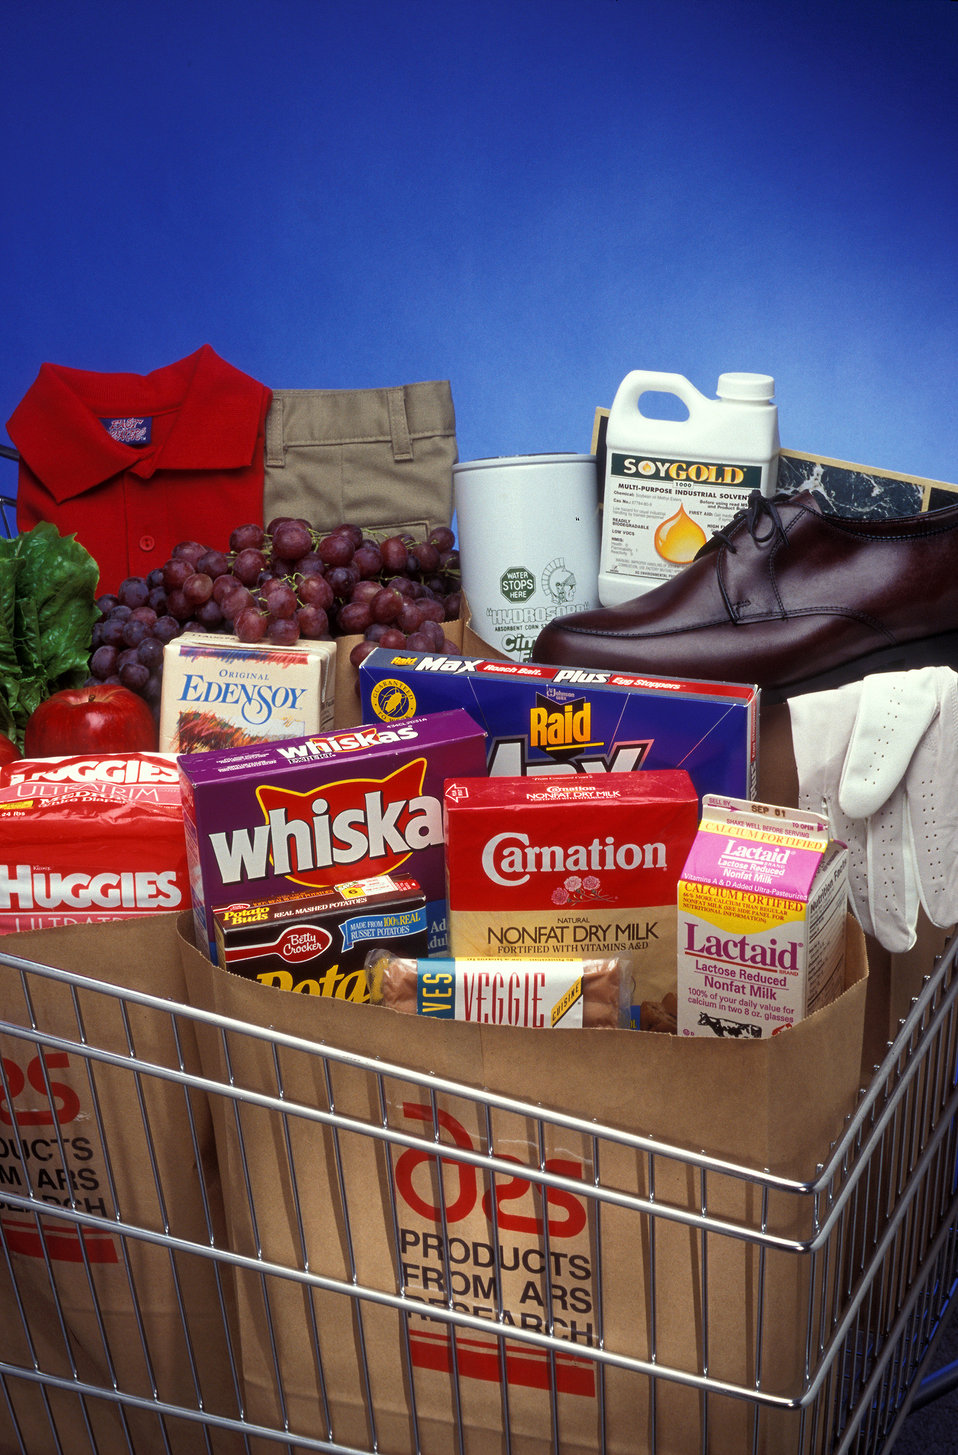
The U.S. enjoys the cheapest food in the world. Each year, dozens of improved products and new varieties of fruits, nuts, and vegetables emerge from the laboratories and greenhouses of the U.S. Department of Agriculture (USDA) Agricultural Research Service (ARS).